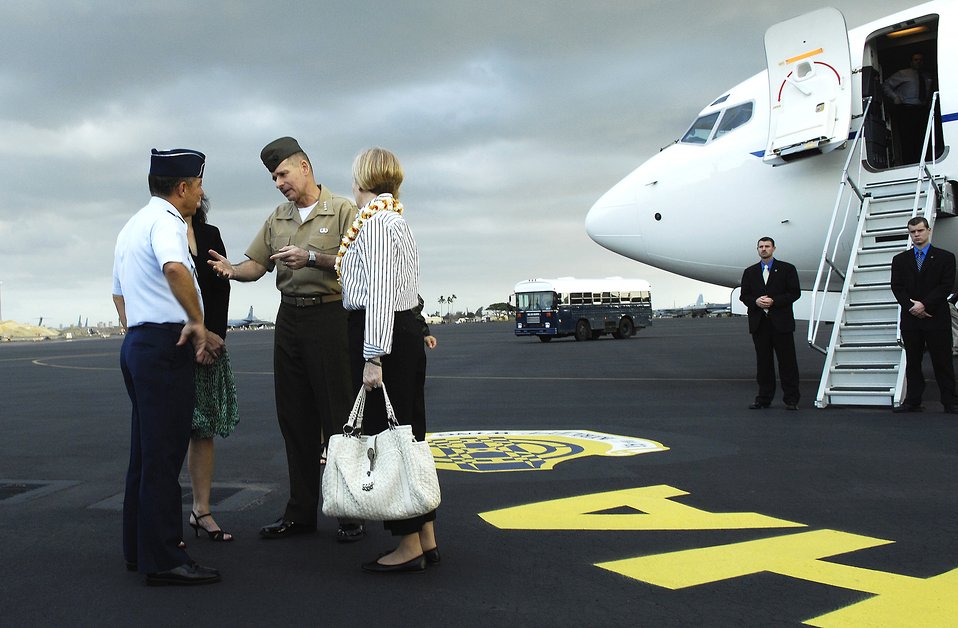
General Pace visits Hawaii

Gen. Peter Pace, chairman of the Joint Chiefs of Staff, and his wife, Lynne, talk with Lt. Gen. Dan Leaf, deputy commander of Pacific Command, and his wife, Amy, upon arriving at Hickam Air Force Base, Hawaii, on Feb. 8.